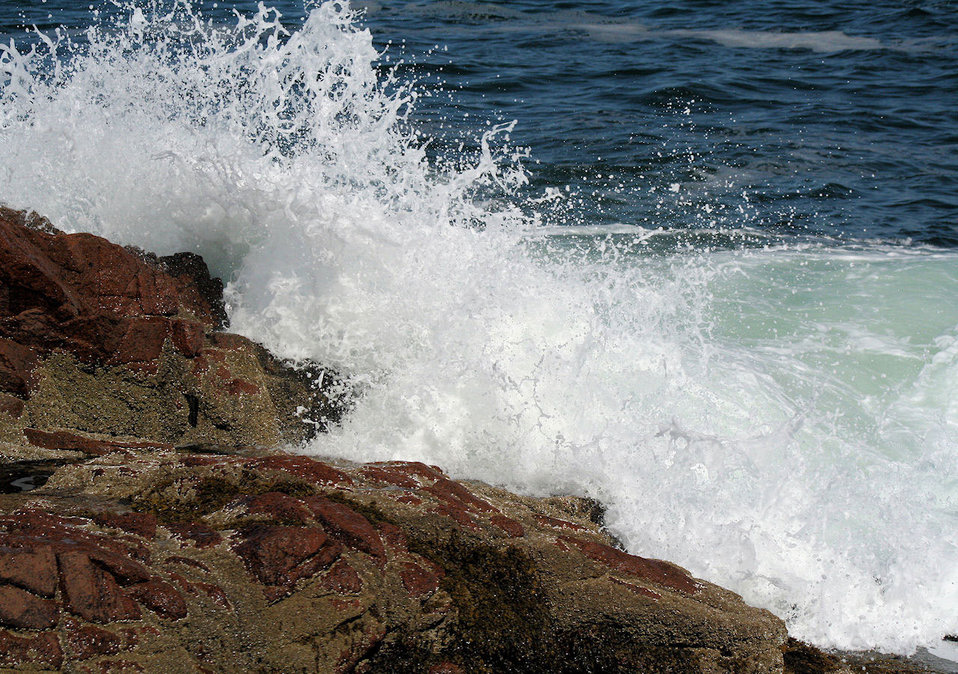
Ocean waves hitting rocks

Picture taken in arcadia park, maine of the ocean waves hitting the rocks.